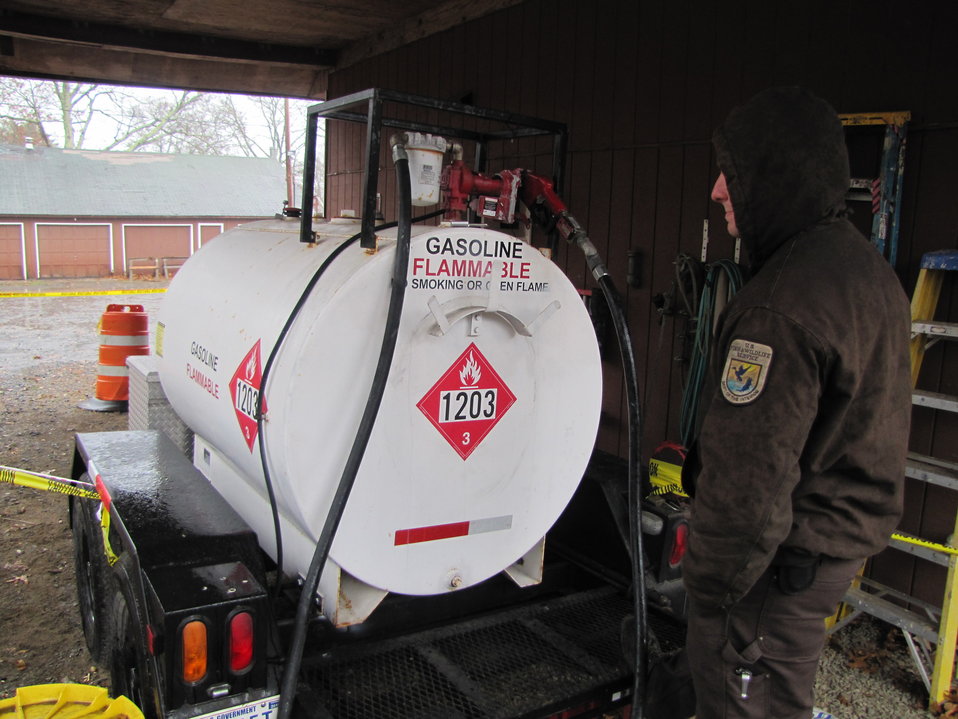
Fuel tank at Long Island National Wildlife Refuge (NY)